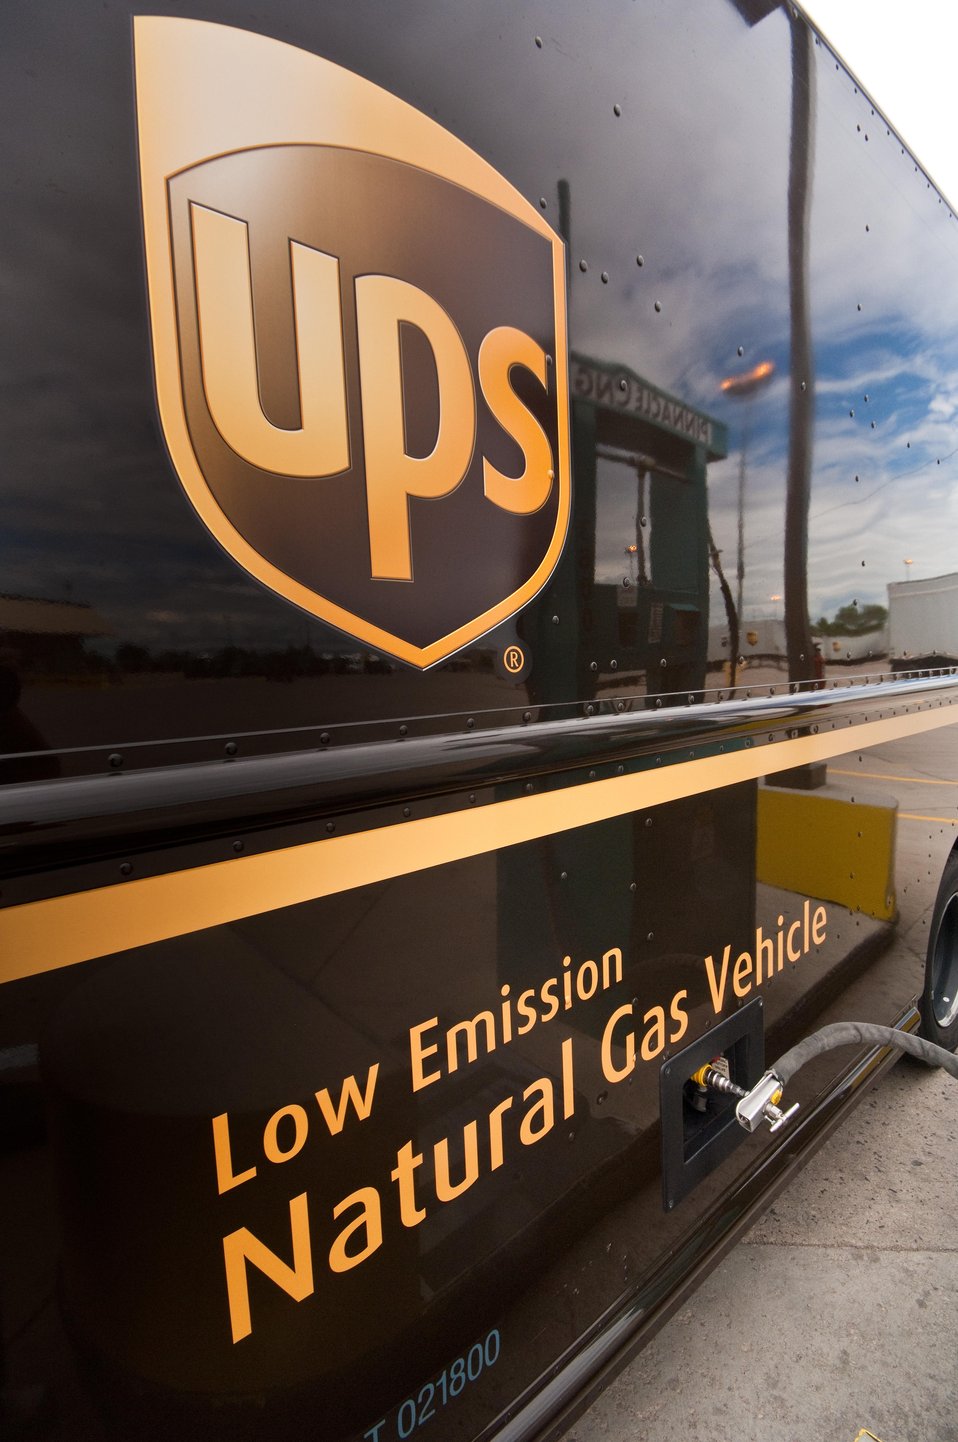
A UPS DELIVERY TRUCK FUELS UP WITH COMPRESSED NATURAL GAS.

President Obama unveiled the National Clean Fleets Partnership, a public-private partnership that will draw on the expertise of the Department of Energy to help large companies reduce diesel and gasoline use in their fleets by incorporating electric vehicles, alternative fuels and fuel-saving measures into their operations. Charter members of this partnership include AT&T, FedEx, Pepsi Co., UPS and Verizon.